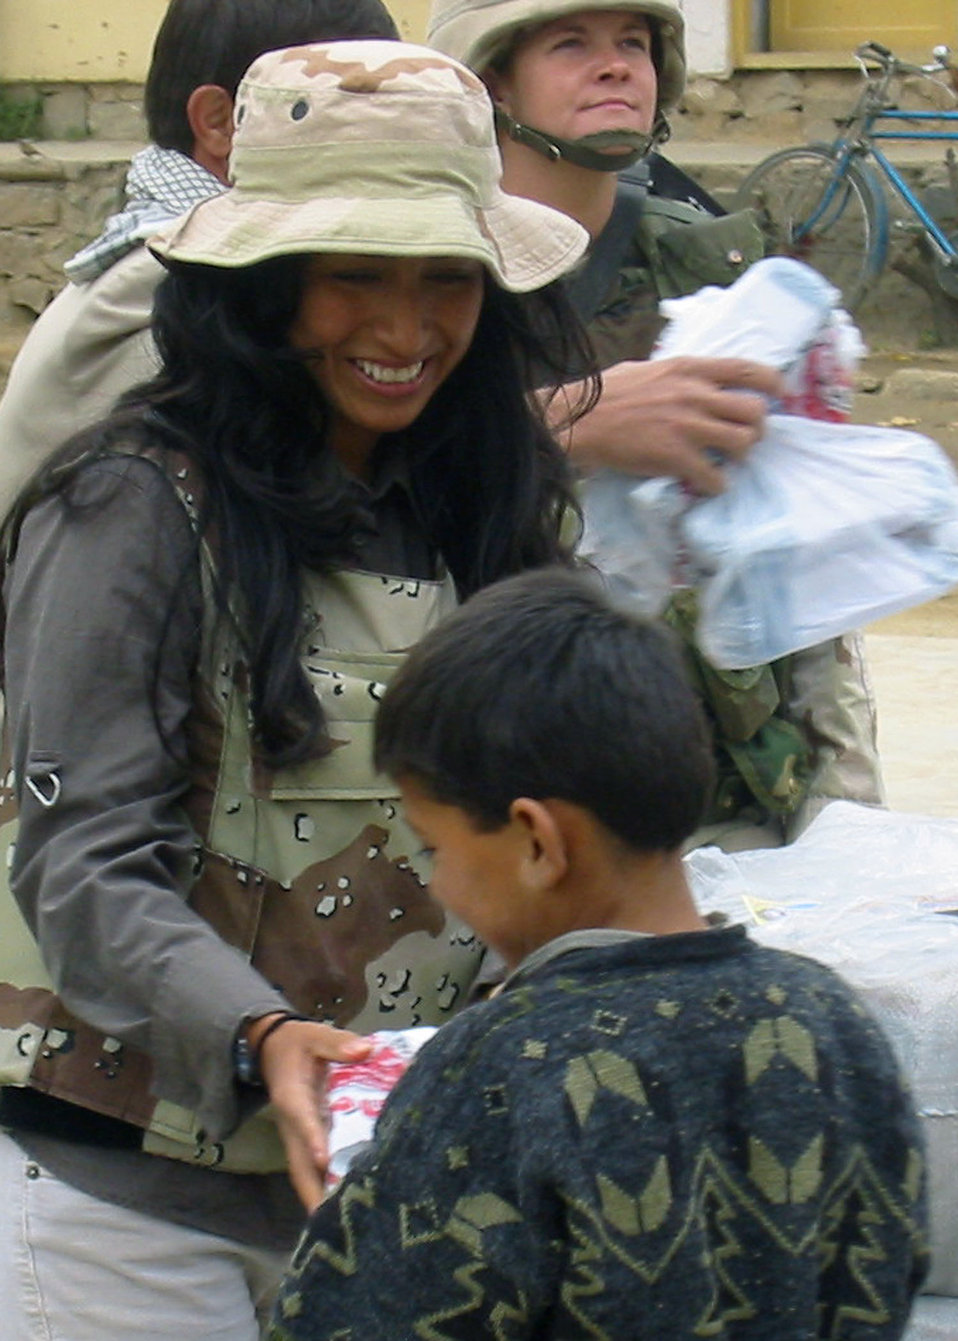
Flag-flying donations warm American hearts, Afghan feet

CHARIKAR, Afghanistan -- Mili Suits hands a bag of winter shoes to an Afghan child. She visited the village orphanage to help distribute $300 worth of shoes to the children residing in the youth shelter. Funds for the footwear were donations raised through the 455th Air Expeditionary Wing’s flag-flying program at nearby Bagram Air Base. Ms. Suits is an airfield manager participating in the Air Force Contract Augmentation Program.